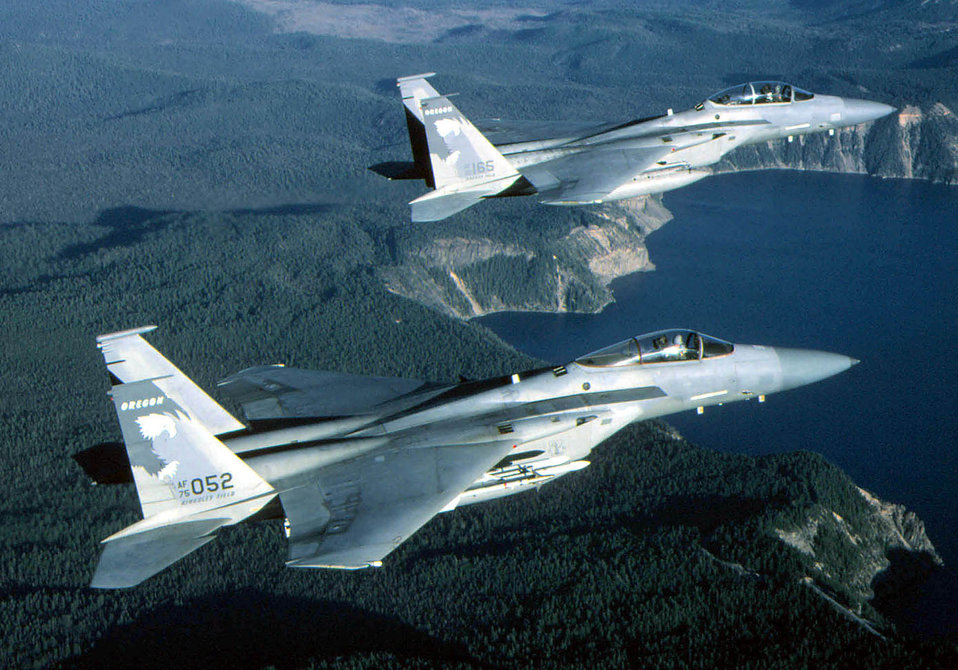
Eagle twins

FILE PHOTO -- The F-15 Eagle is an all-weather, extremely maneuverable, tactical fighter designed to permit the Air Force to gain and maintain air superiority in aerial combat. The Eagle's air superiority is achieved through a mixture of unprecedented maneuverability and acceleration, range, weapons and avionics. It can penetrate enemy defense and outperform and outfight any current enemy aircraft.